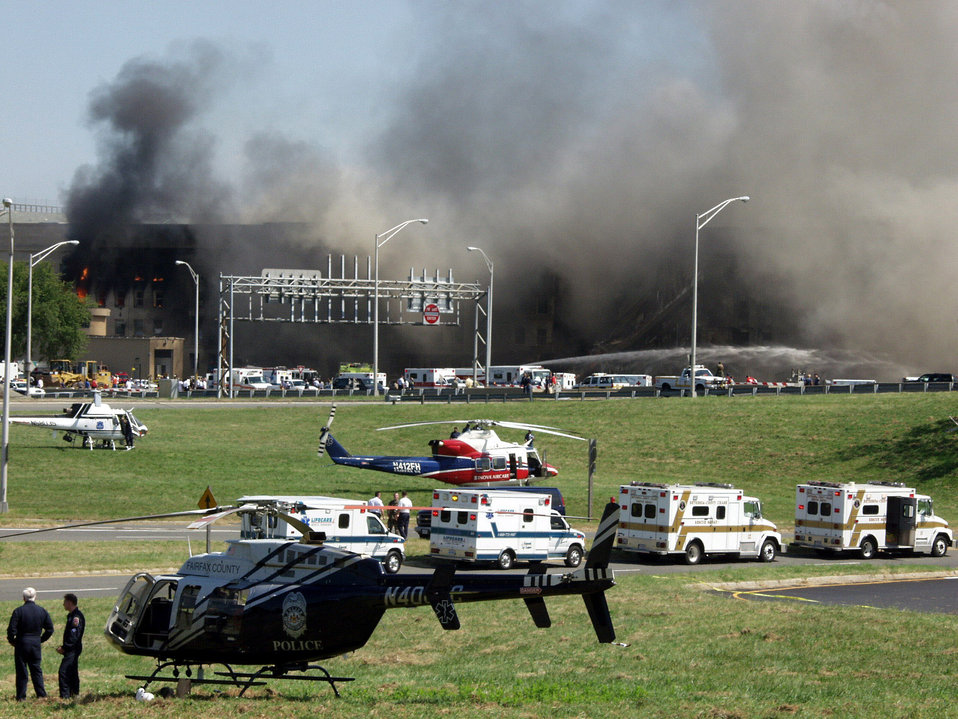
Pentagon Damage

WASHINGTON -- Emergency response vehicles line the area around the Pentagon, as smoke clouds block the horizon shortly after a terrorist bombing here Sept. 11.